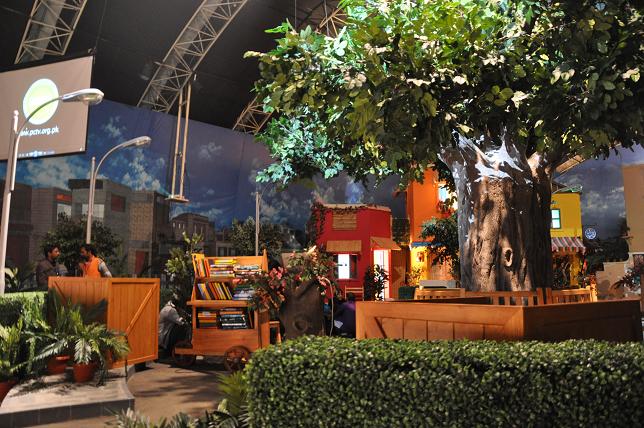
Sim Sim Hamara set.